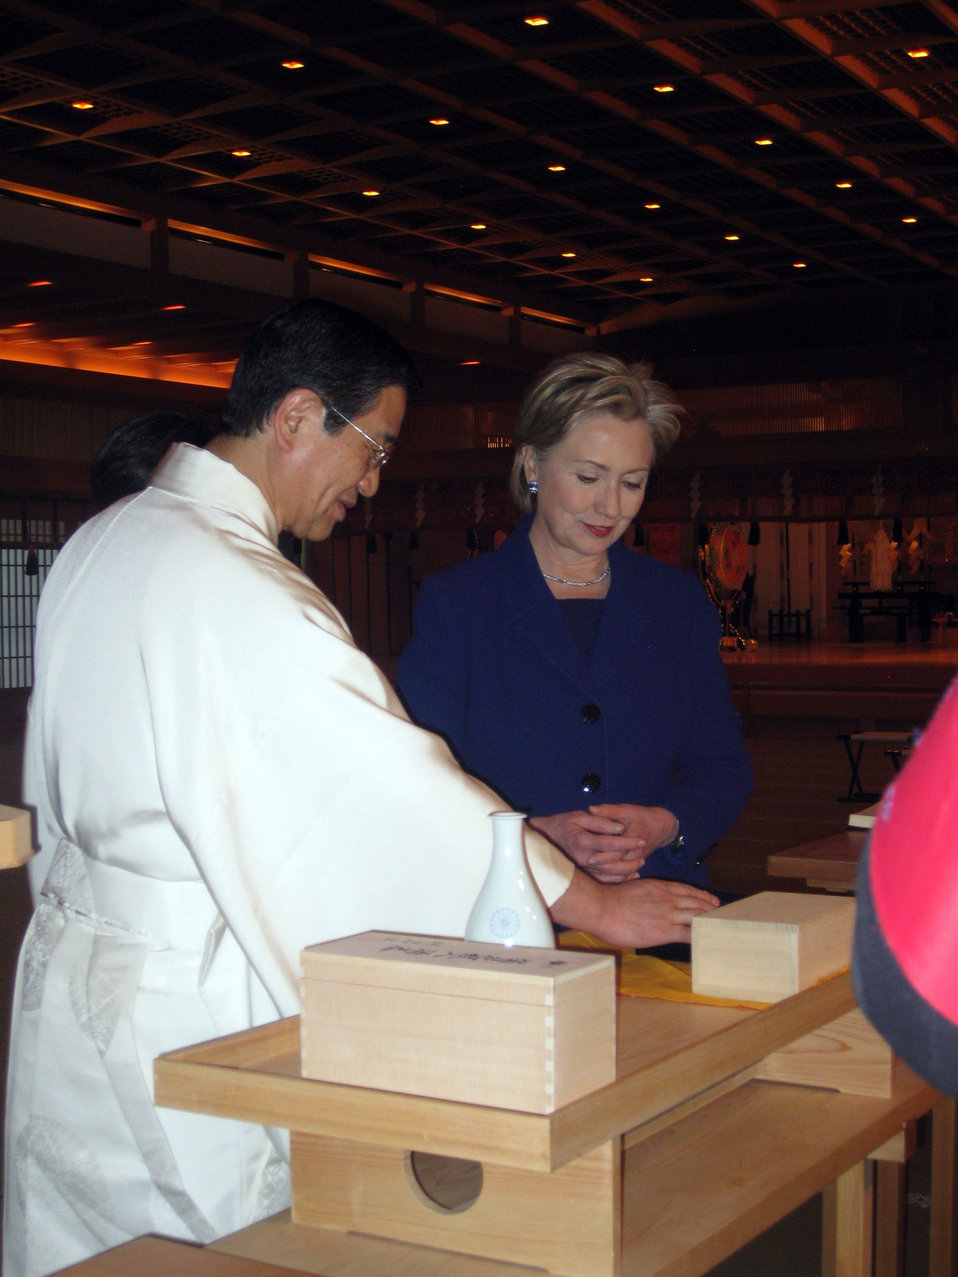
Secretary Clinton Visits Meiji Shrine

U.S. Secretary of State Hillary Clinton visits the Meiji shrine in Tokyo, Japan February 17, 2009.